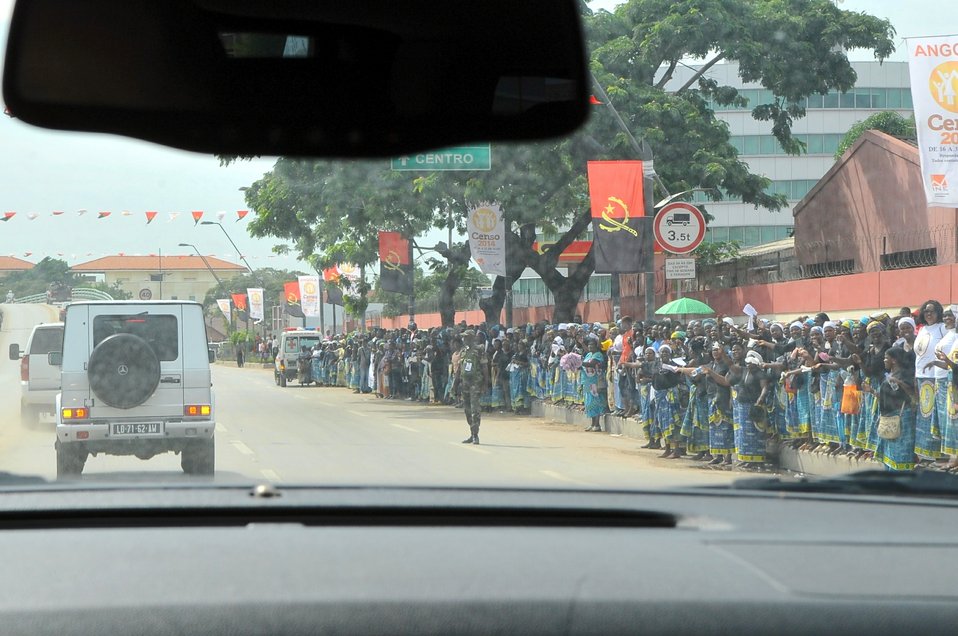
Angolans Line Street to Bid Farewell to Late Archbishop D. Damião Franklin of Luanda

Crowds of singing, chanting, and swaying Angolans lined several streets to bid farewell to a late Archbishop D. Damião Franklin of Luanda as the motorcade carrying U.S. Secretary of State John Kerry arrived in Luanda for a visit on May 4, 2014.